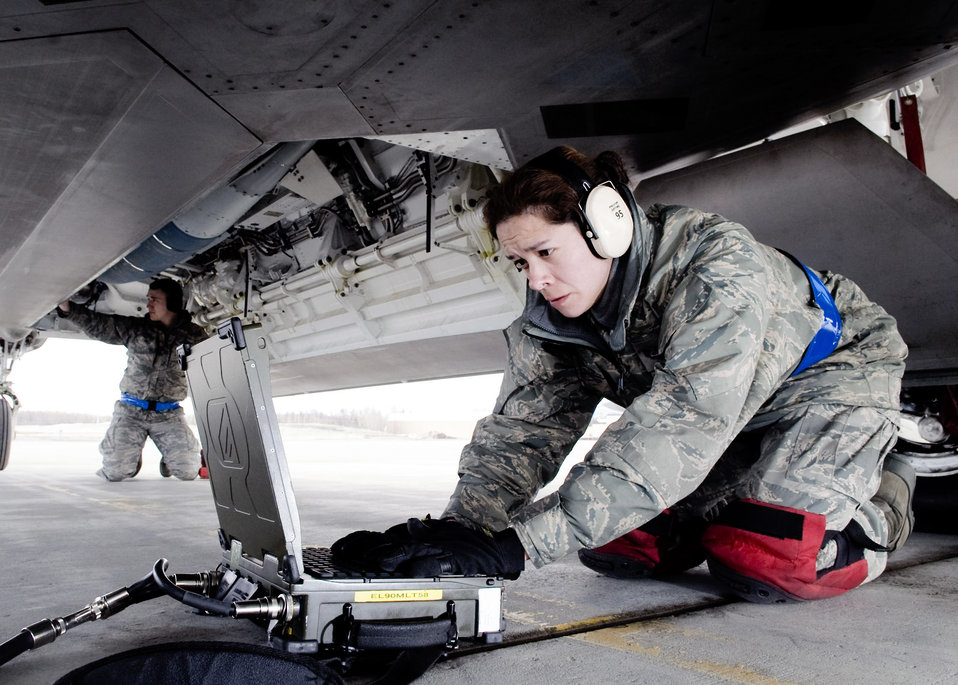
Bombs on target

Staff Sgt. Geneva Rumbaugh looks over her checklist after loading a Joint Direct Attack Munition onto an F-22 Raptor while Airman 1st Class Justin Baker inspects the JDAM April 14 at Elmendorf Air Force Base, Alaska. Sergeant Rumbaugh and Airman Baker, both from the 525th Aircraft Maintenance Unit, ensure the JDAM dropped by 525th Fighter Squadron is successful.